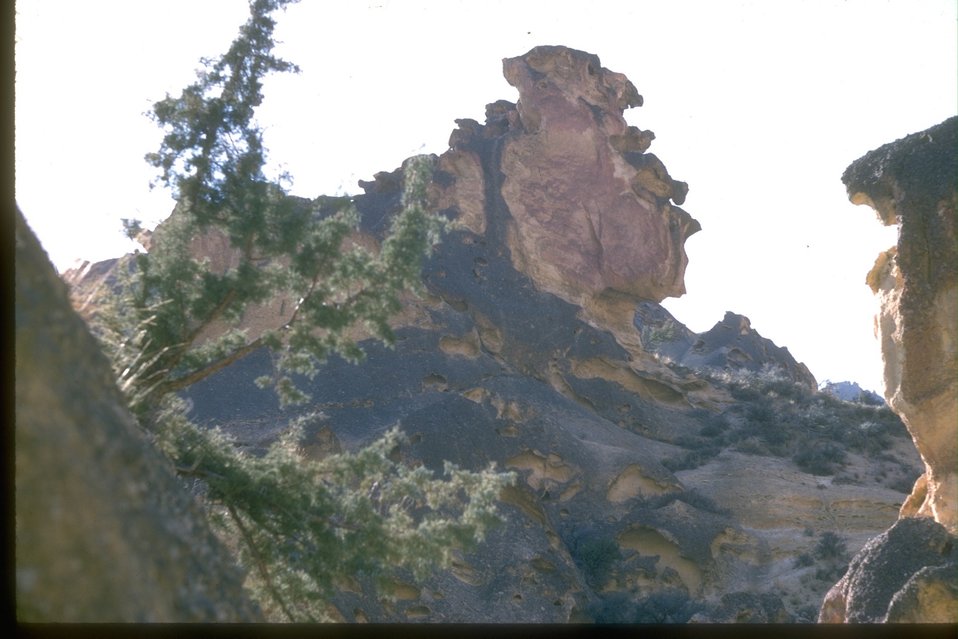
Mountainous area with large rock formation.